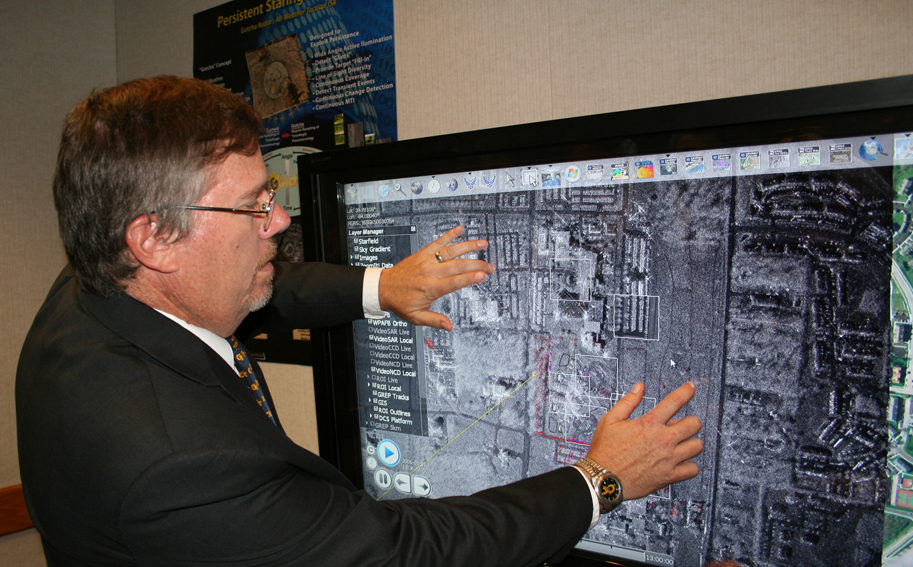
Gotcha Radar

Dr. Michael Minardi uses a touch screen to demonstrate synthetic aperture radar imagery captured during a test of the Gotcha radar system over Wright-Patterson Air Force Base, Ohio. Air Force Research Laboratory researchers are developing Gotcha with the aid of a supercomputer that will translate in real time raw radar data into high-resolution 3-dimensional images. Gotcha is one of portfolio of research efforts to provide enhanced intelligence, surveillance and reconnaissance capabilities to future joint warfighters. Dr. Minardi is Gotcha program manager with AFRL's Sensors Directorate.